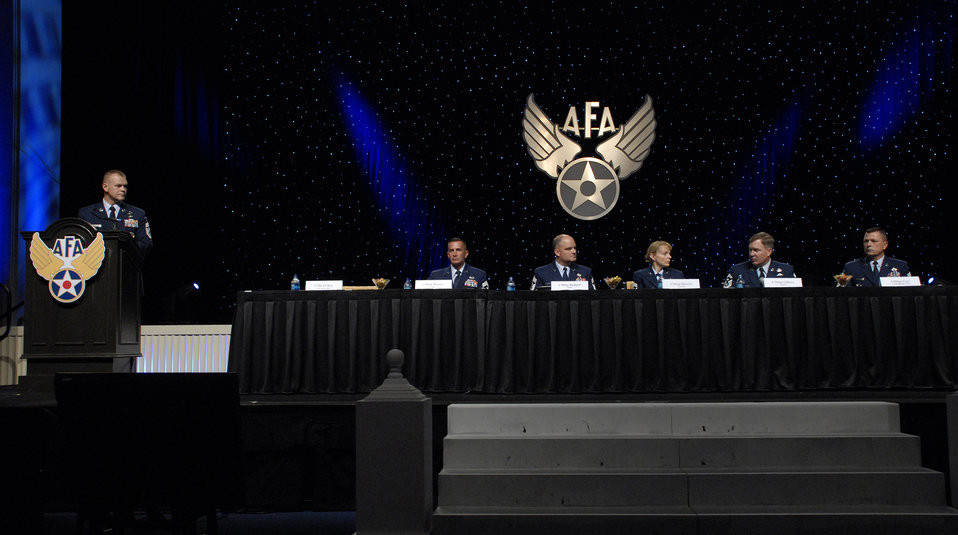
Senior Air Force enlisted officials address Airmen's concerns

Chief Master Sergeant of the Air Force James A. Roy gives opening remarks during the Chief's Forum at the 2009 Air Force Association Air & Space Conference and Technology Exposition Sept. 15, 2009, in Washington, D.C. During the event the command chief panel discussed